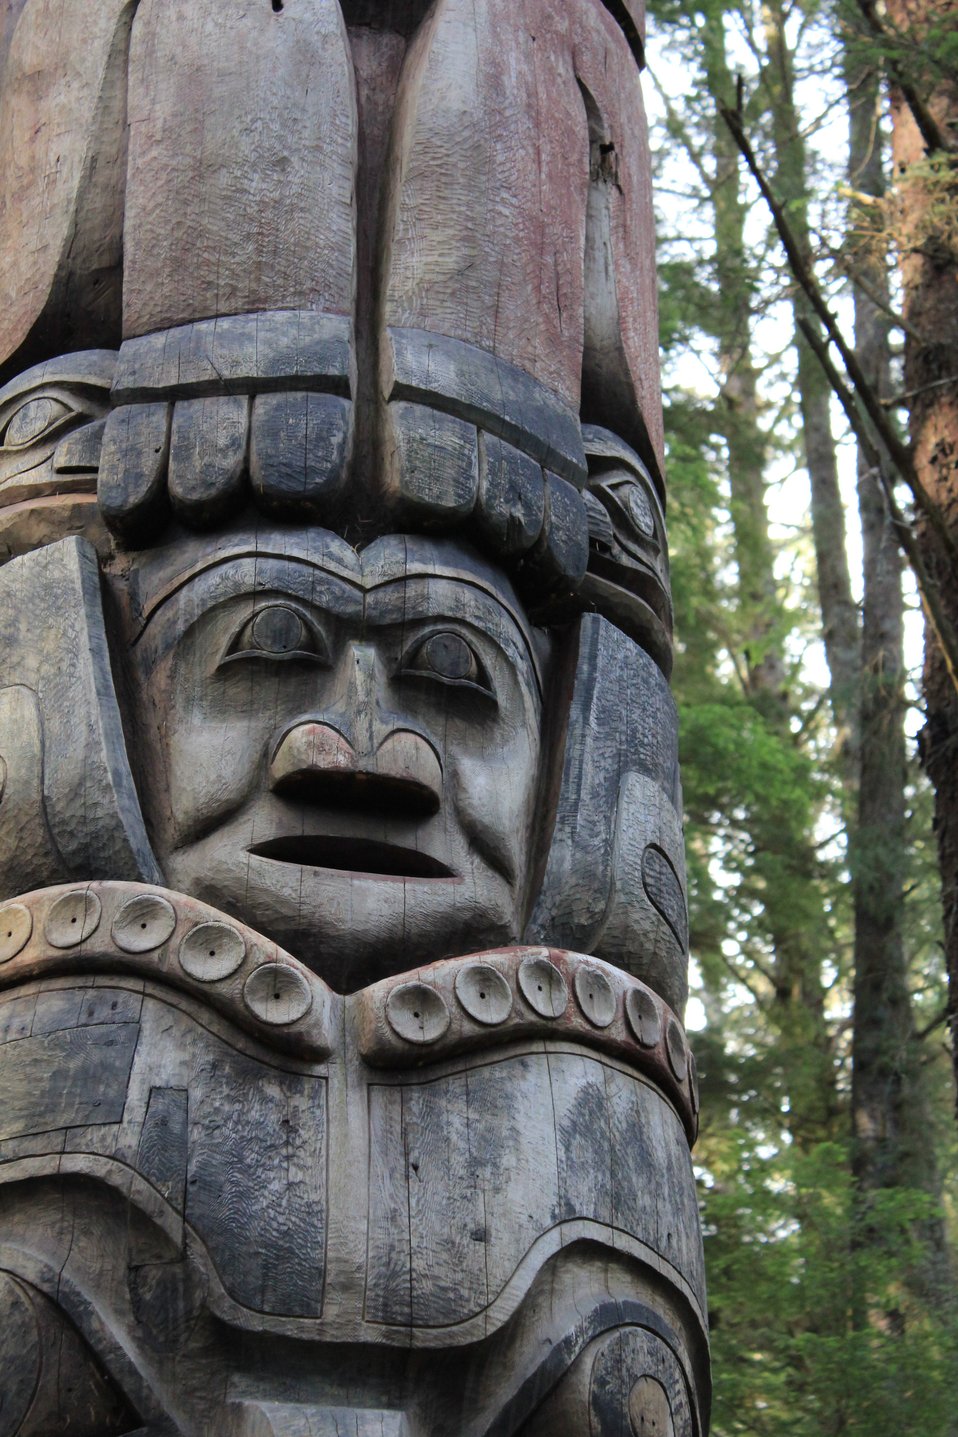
Intricate carving of totem pole. Note wooden carved European buttons below face showing intermingling of cultures.